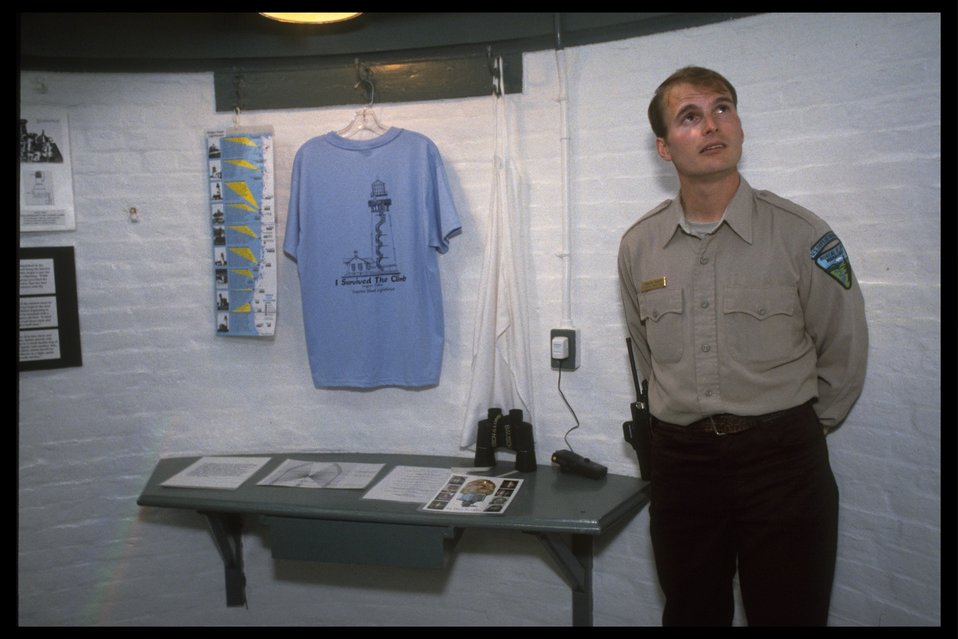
Inside of Yaquina Head Lighthouse.